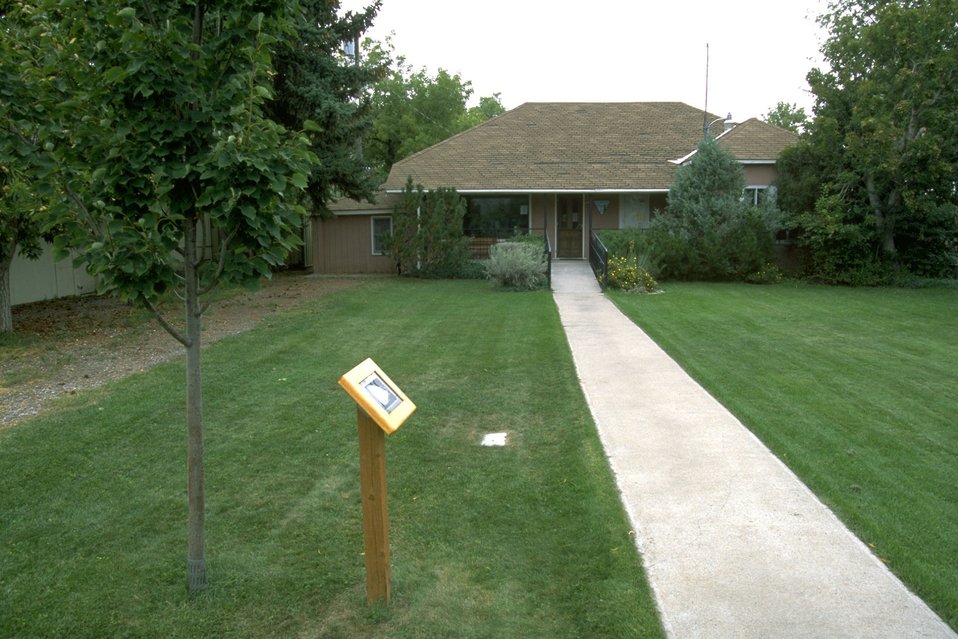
Old BLM visitor contact station in Fort Benton